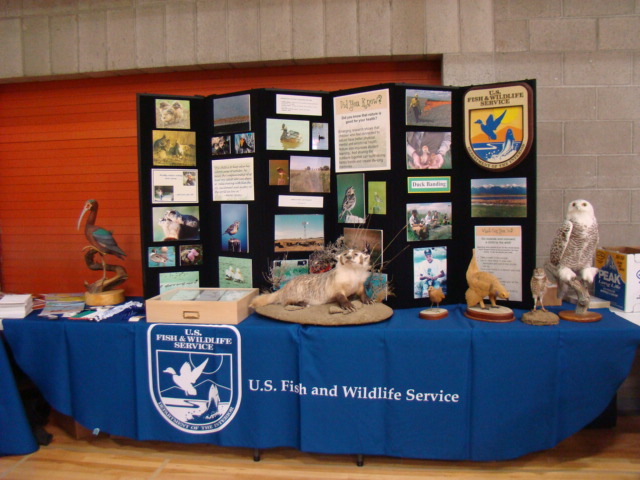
Great Falls STEM Expo

Every spring Benton Lake NWR participates in the Great Falls STEM (Science, Technology, Engineering, Math) Expo. We set up a booth complete with pictures, furs, skulls, animals, and even a duck banding station!